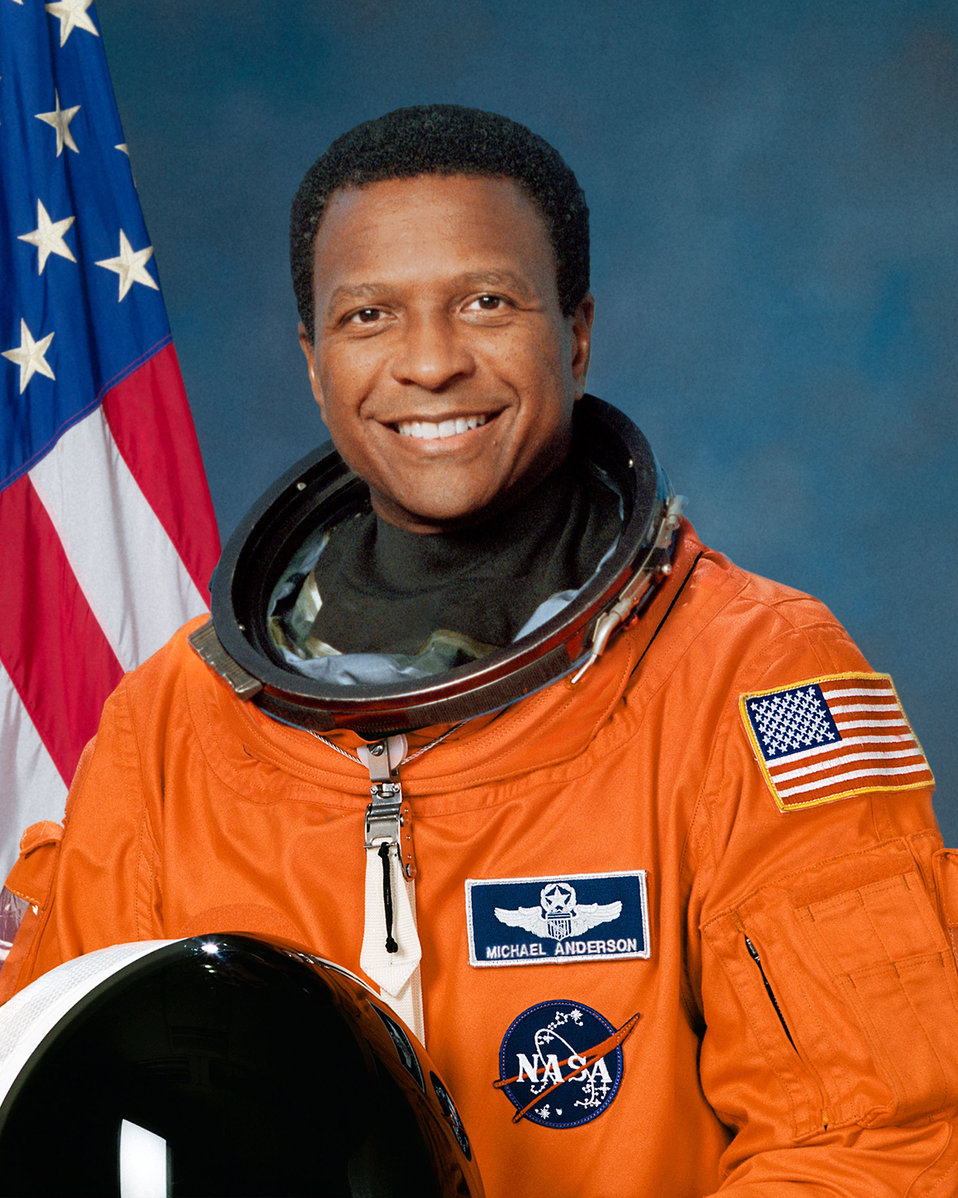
Michael P. Anderson, an African-American astronaut who died aboard the space shuttle Columbia in February 2003.